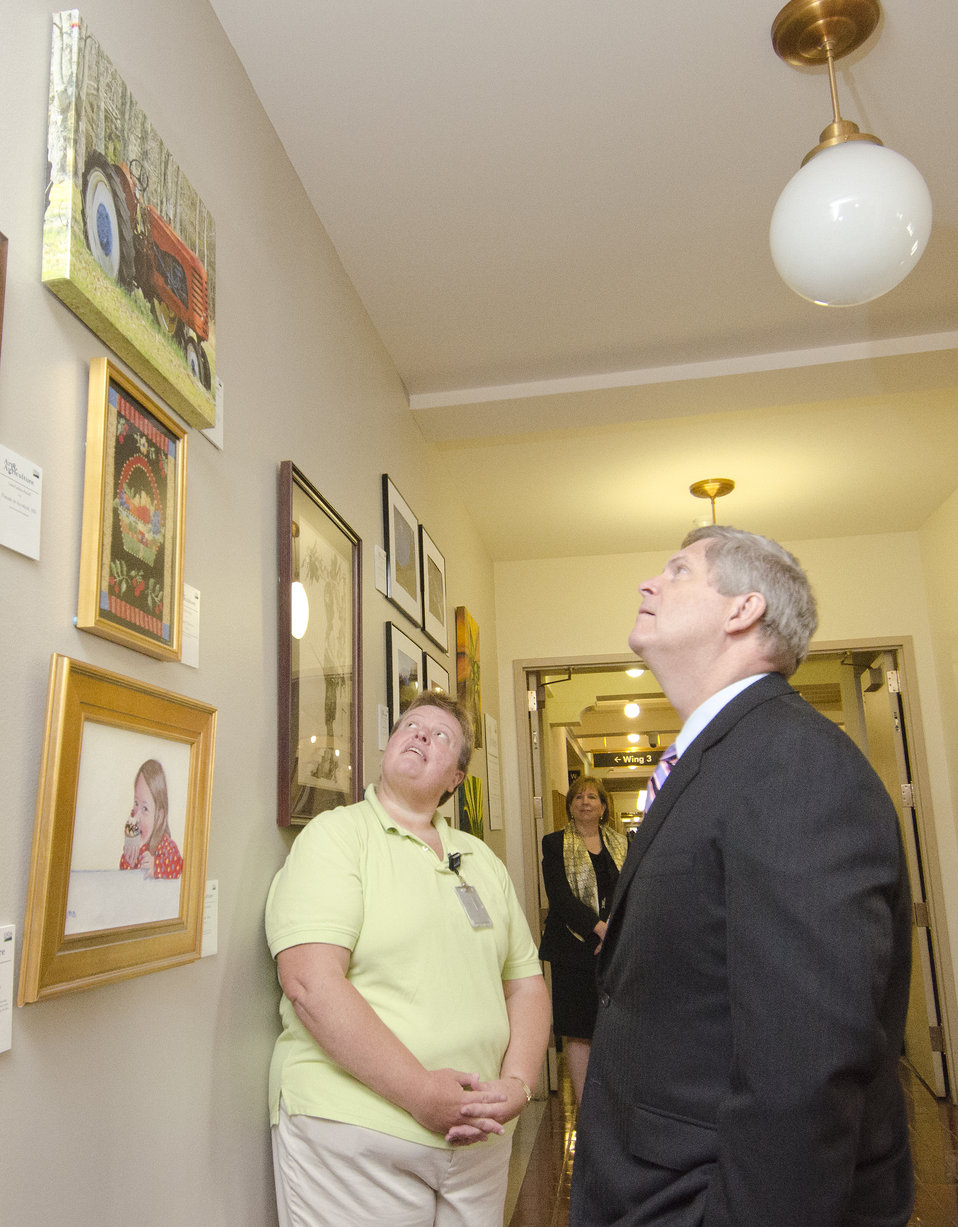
Valarie Schmale discusses her artwork with Agriculture Secretary Tom Vilsack during his visit to the gallery of winning entries and some of the employee artists from the inaugural competition for Art & Agriculture, Thursday, May 31, 2012, in the South Building, Washington, D.C. U.S. Department of Agriculture (USDA) full-time and part-time employees submitted art based on ten agricultural themes. The event was part of USDA's 150th Anniversary celebration and the winning artwork is on display from May 15 through December 31, 2012. Artistic expression is a creative outlet that is vital for an individual to grow and develop in their environment.